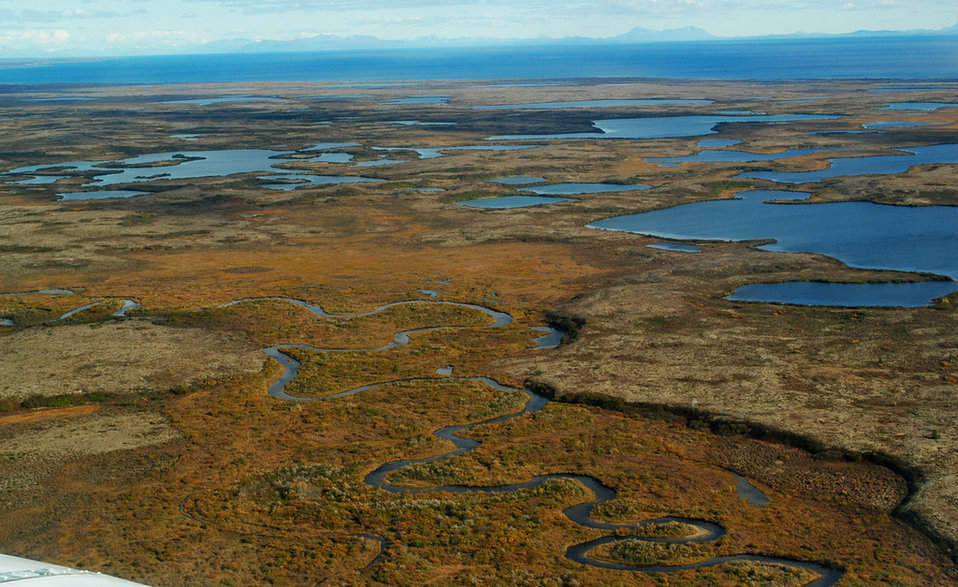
September 27, 2011 Water everywhere

One of the first things you notice from the air is a landcape is brimming with water in every direction - such as in this view of Kaskanak Creek in the Kvichak watershed.

The vast amount of aquatic habitat and the complexity of that habitat give a hint into the reasons why these watersheds harbor such large and genetically diverse salmon communities.

Visit www.epa.gov/bristolbay for more information about EPA's Bristol Bay Watershed Assessment